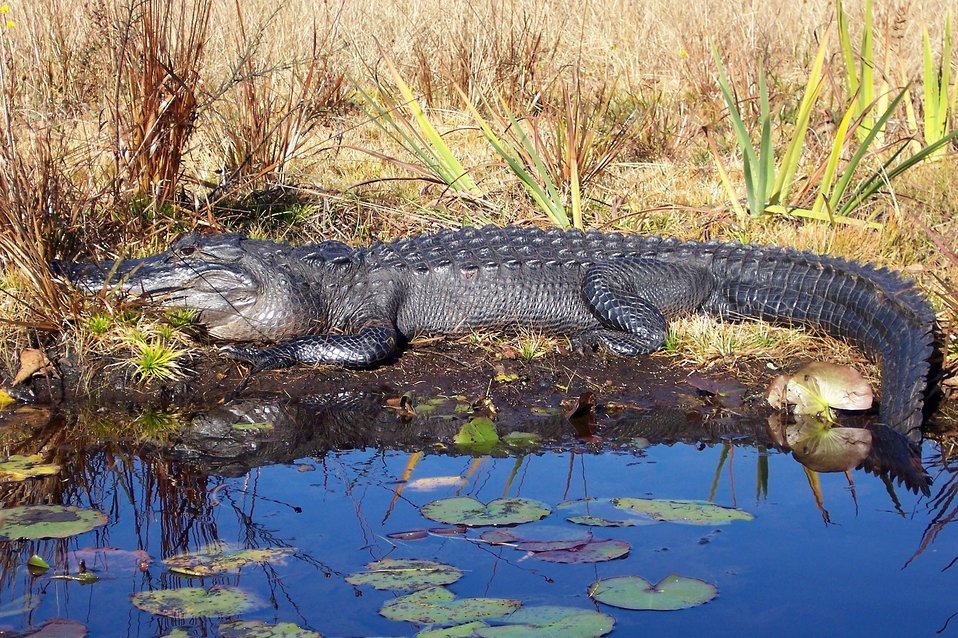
Okefenokee Refuge

Alligator in Okefenokee National Wildlife Refuge wilderness, GA.